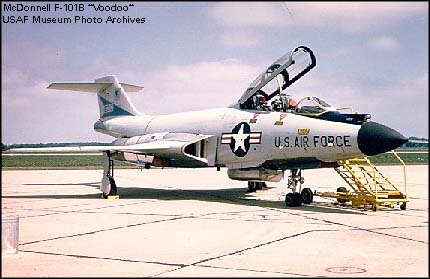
F-101B Voodoo

1950's -- F-101B Voodoo. Courtesy photo.